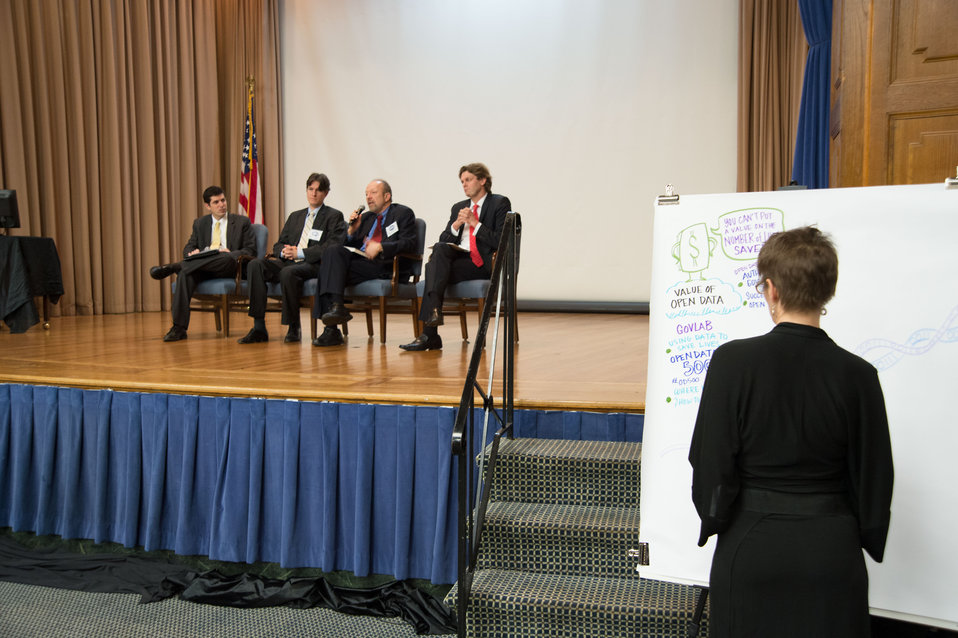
he White House Office of Science and Technology Policy, the White House Office of Public Engagement, the U.S. Department of Transportation, and the U.S. Department of Agriculture (USDA) host the second annual “Safety Datapalooza,” in the Jefferson Auditorium at USDA in Washington, D.C. on Tuesday, Jan. 14, 2014. The “Safety Datapalooza,” highlights innovators from the private, nonprofit, and academic sectors who have used freely available government data to build products, services, and apps that advance public safety in creative and powerful ways. This year’s meeting features new safety data resources in the areas of transportation, food, occupational and consumer product safety tools to improve disaster preparedness and emergency response. A series of panel discussions and brainstorming sessions are being held in which attendees will have the opportunity to discuss how technology and open data are being used to address public safety challenges across America.